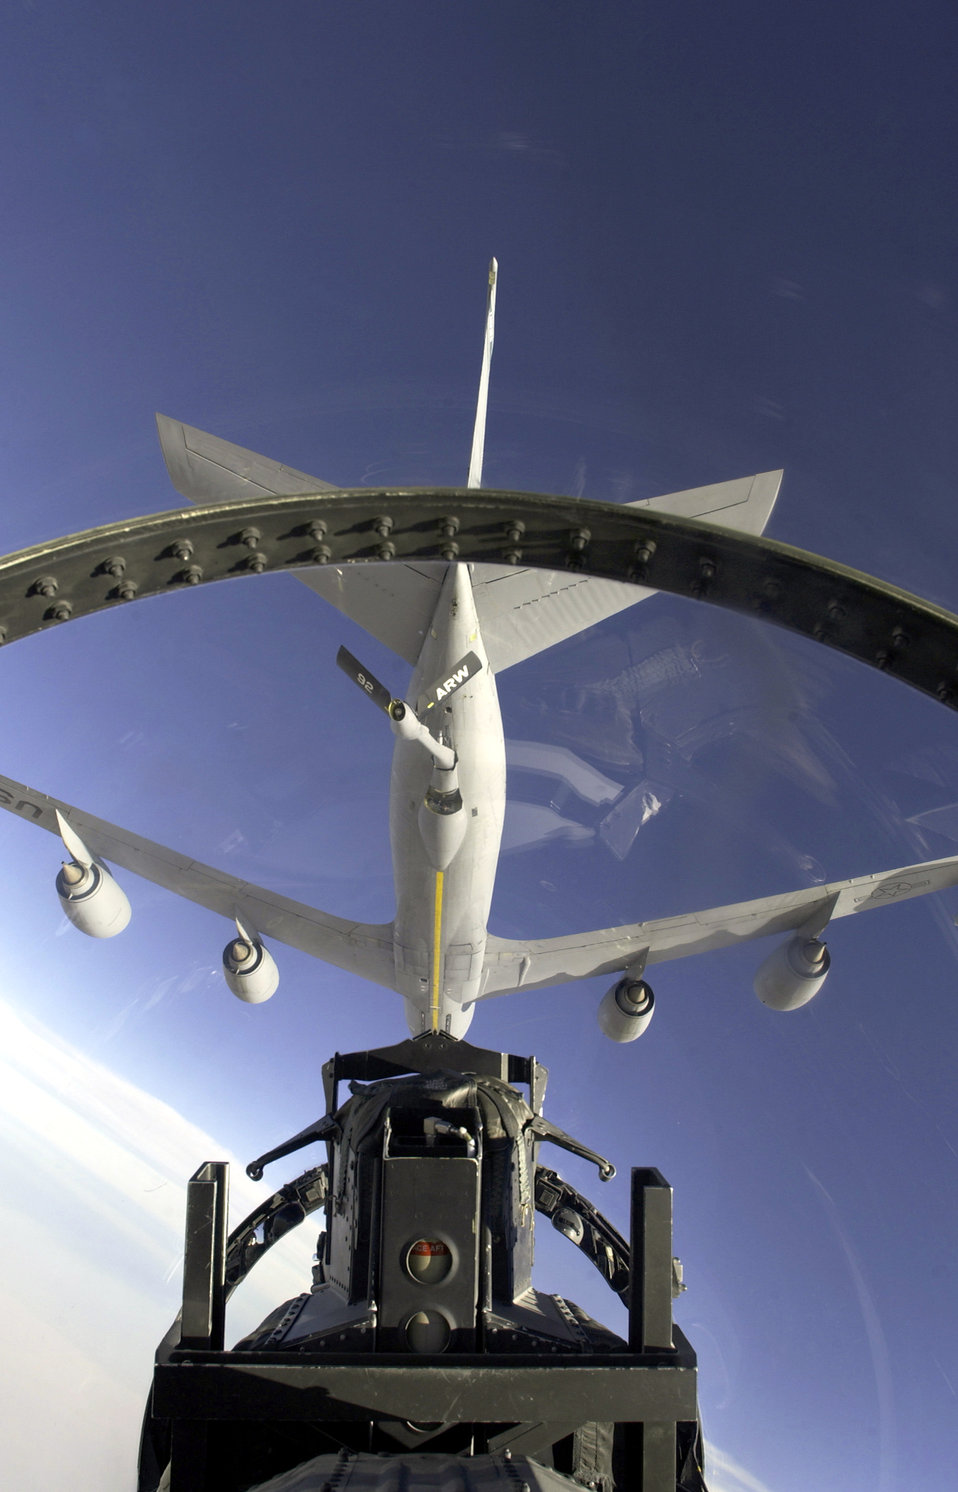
Line 'em up

SOUTHWEST ASIA -- An F-15E Strike Eagle supporting operations here prepares to be refueled by a KC-135 Stratotanker from the 340th Expeditionary Air Refueling Squadron on Dec. 29.